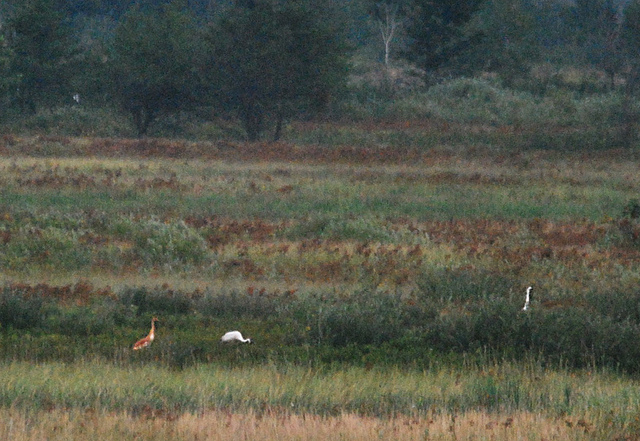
whooping crane wild-hatched chick

Necedah National Wildlife Refuge